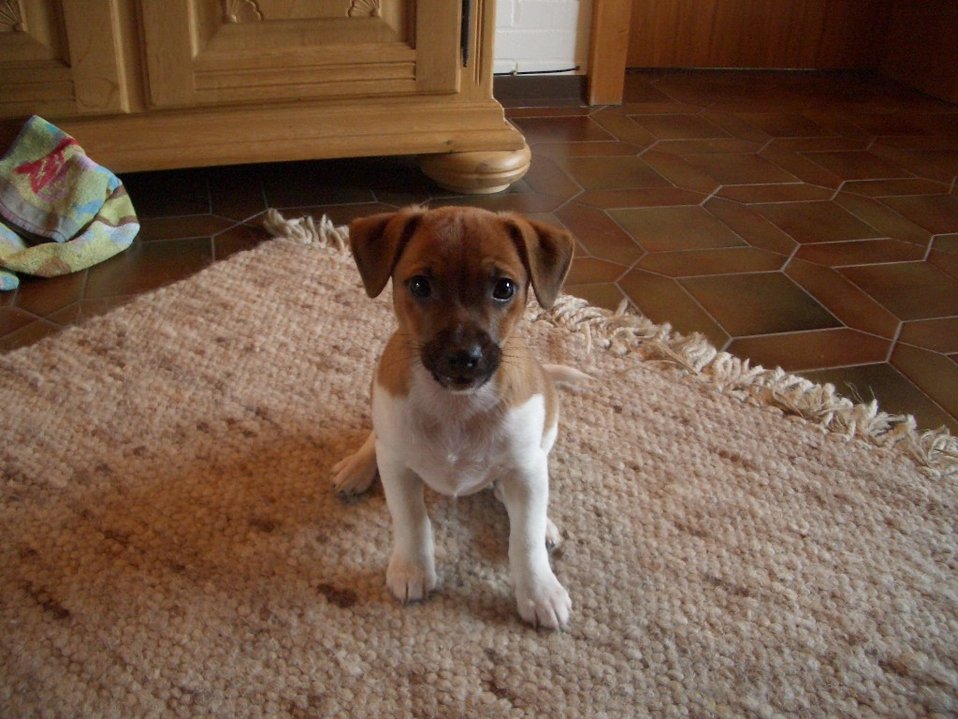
Deutsch: Ein junger Jack Russel